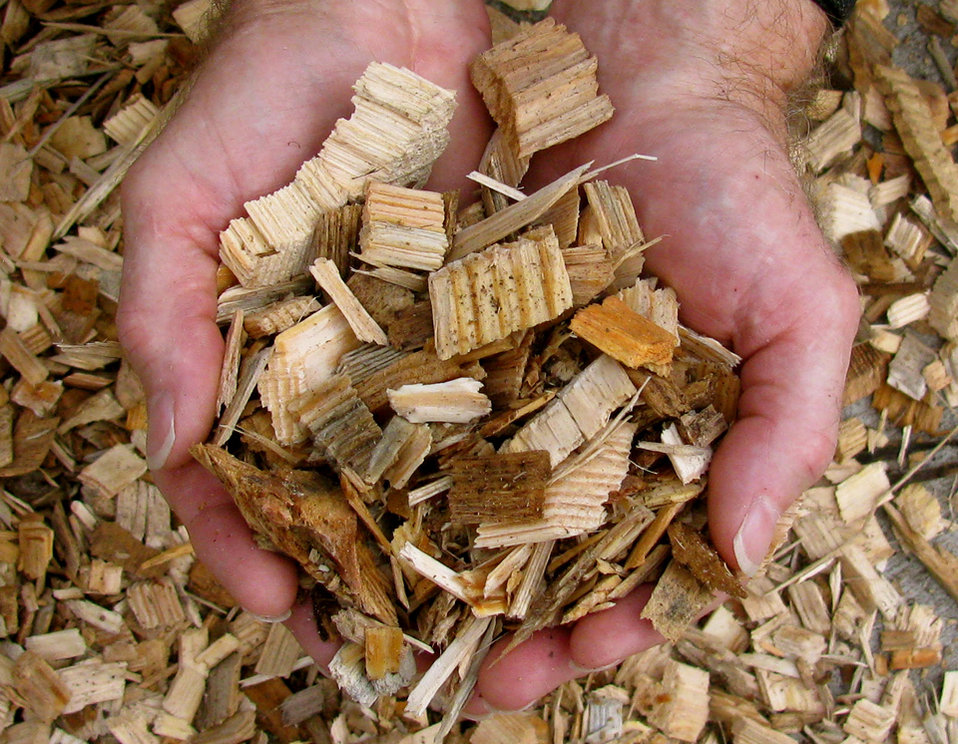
Unlike fossil fuels, wood chips are a renewable source of energy.

At Oak Ridge National Laboratory, an alternative solution to fossil fuels is biomass, or more specifically the gasification of wood product, which provides a cleaner, renewable energy source from which ORNL can produce steam. The majority of hardwood chips could come from logging resources otherwise left behind to decay on forest floors or from sawmill and other manufacturing operation. Wood chip may also be bought from other areas that have experienced major storms.